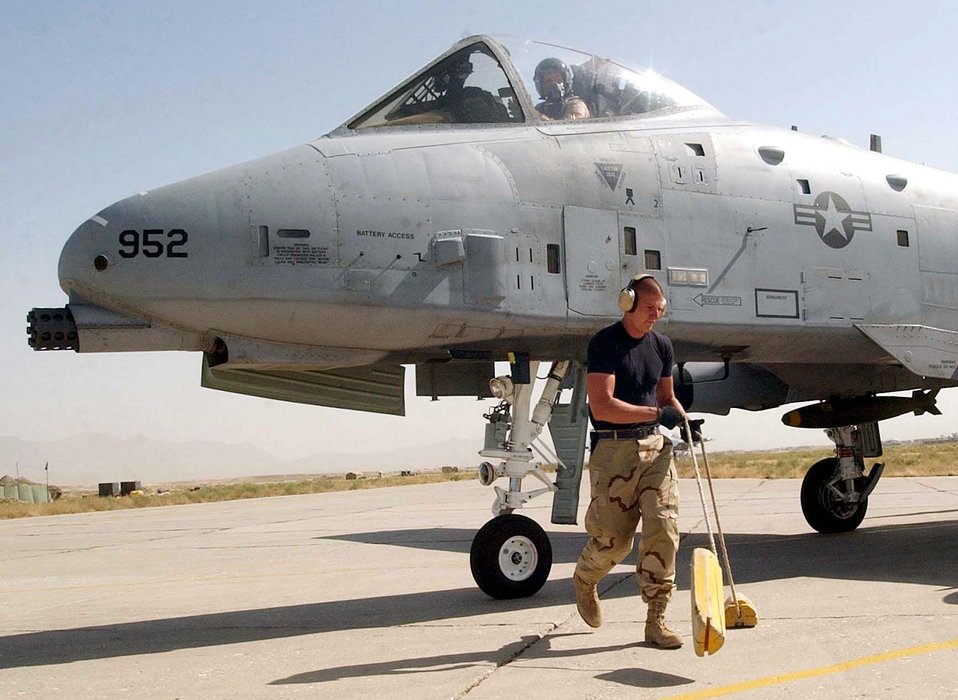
Pulling chalks

BAGRAM AIR BASE, Afghanistan -- Airman 1st Class Ryan Orbin pulls the chocks from an A-10 Thunderbolt II as the final step in an end-of-runway inspection here July 10. Orbin is deployed supporting Operation Enduring Freedom.